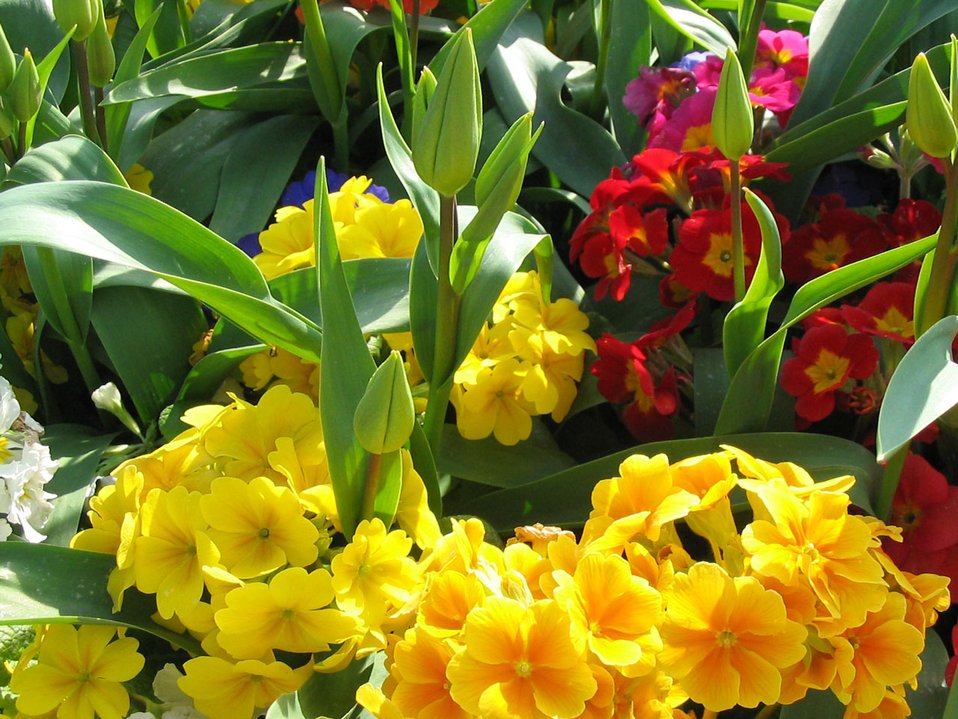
Various flowers

A picture of various flowers in blossom.